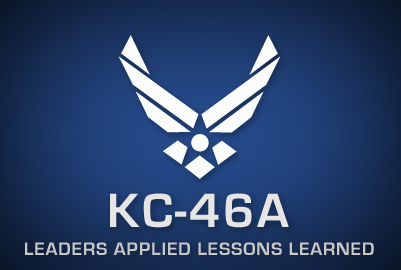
KC-46A